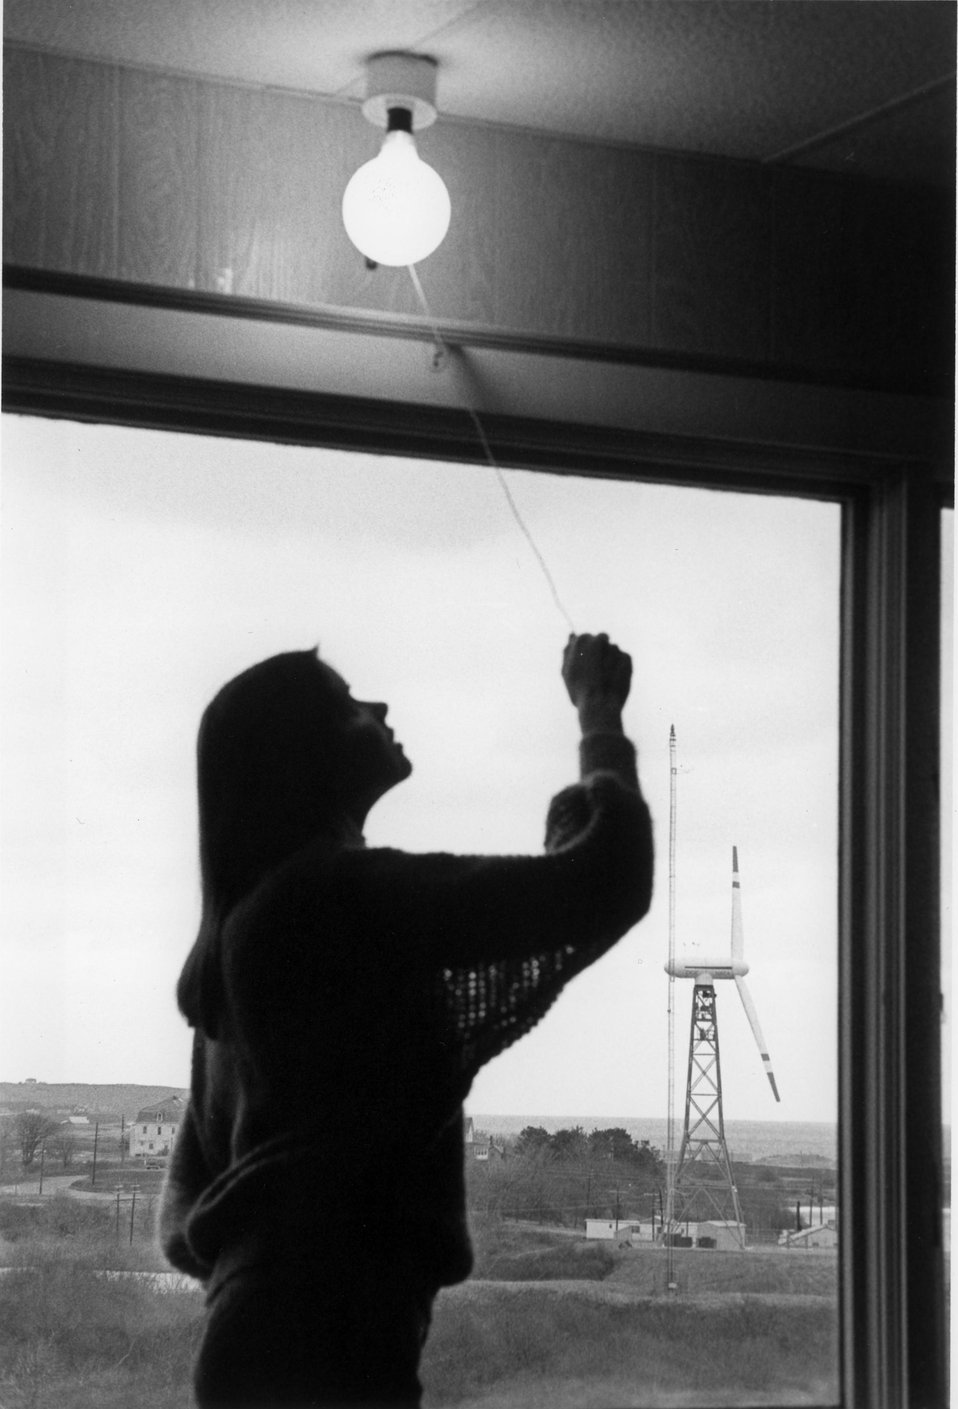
Block Island, Rhode Island wind turbine generates electricity for the community of Block Island. c. 1980